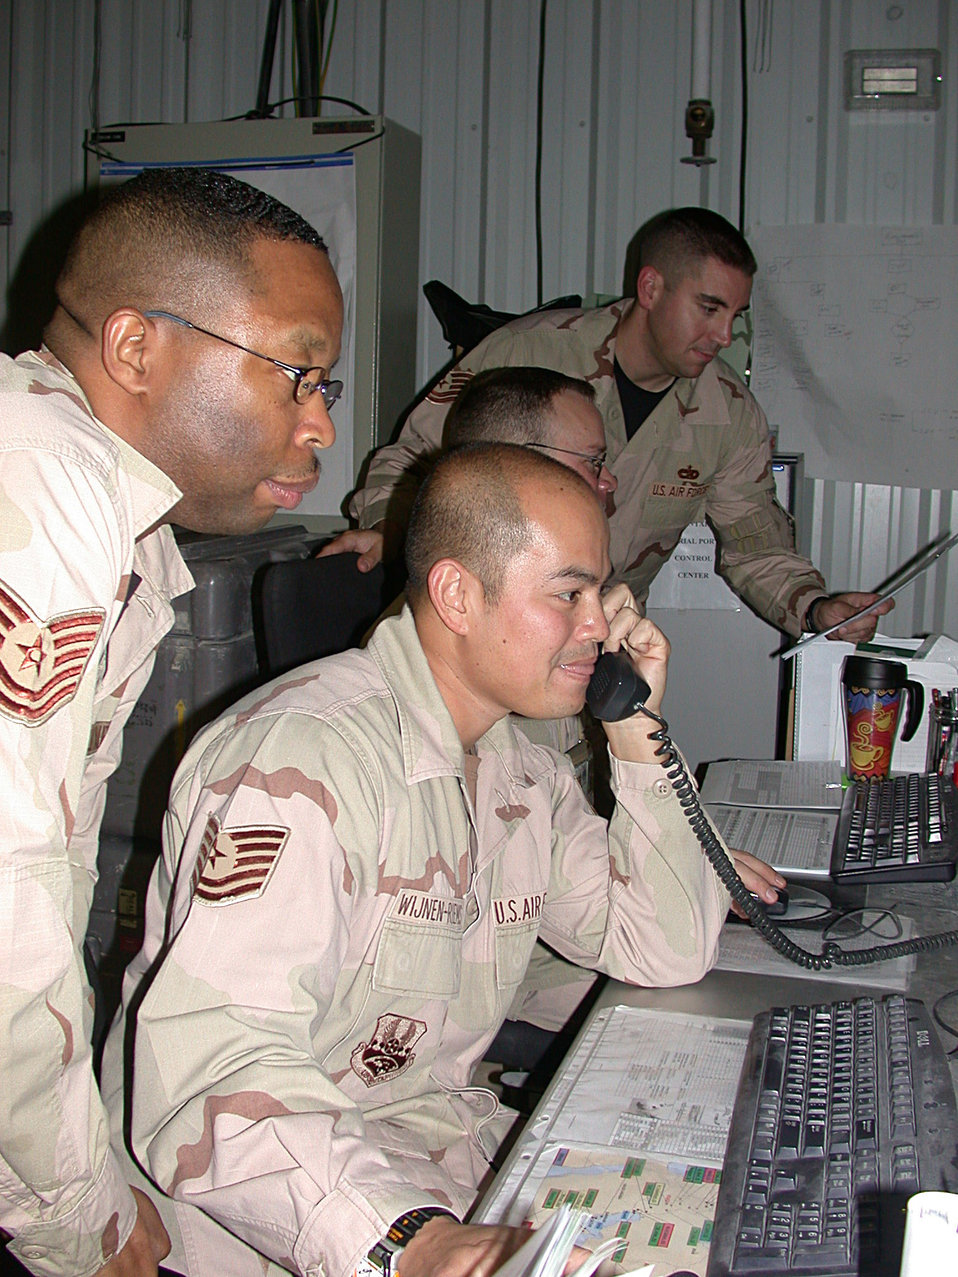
Airlift center

SOUTHWEST ASIA (AFPN) -- Tech. Sgts. Keith Callwood (left) and Maurice Wijnen-Riemes work on a cargo shipment at the U.S. Central Command Air Forces Aerial Port Control Center. Since the center opened in August, cargo backlogs have been reduced to less than 300 pallets per month. Sergeant Callwood is a an in-transit visibility cell controller. Sergeant Wijnen-Riemes is the cargo management section senior controller.